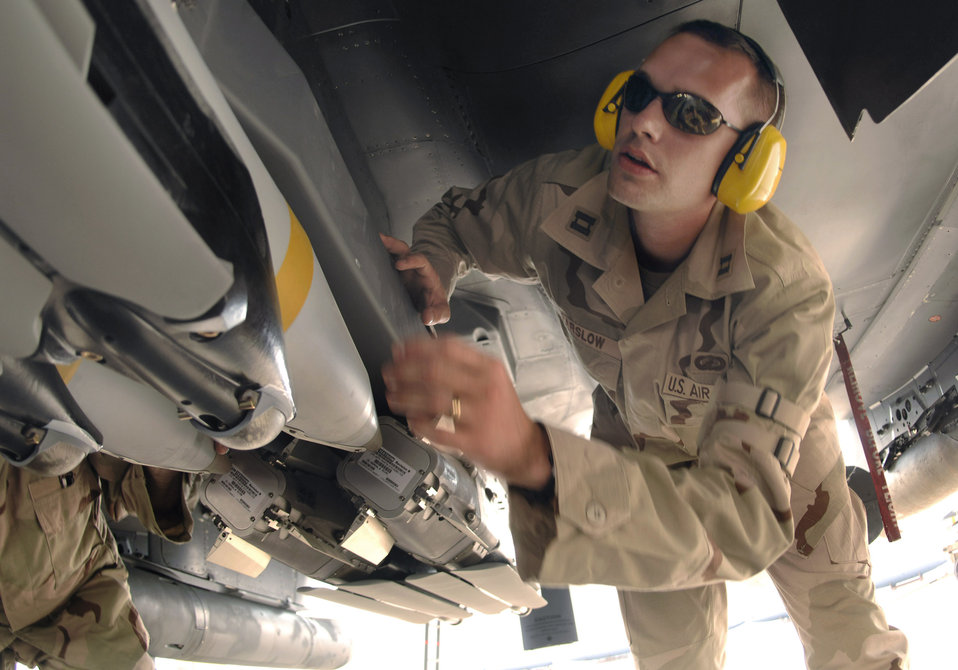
Bomb makes combat debut

Capt. Jim Parslow inspects a weapon carriage with GBU-39/B small diameter bombs mounted on an F-15E Strike Eagle. Captain Parslow is deployed to a forward-operating location from Eglin Air Force Base, Fla.